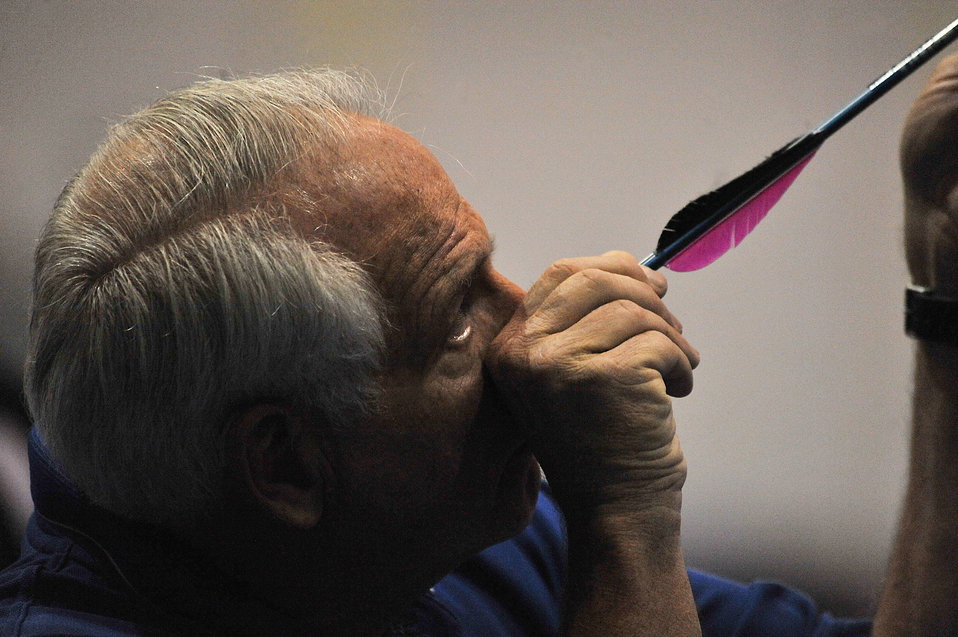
Warrior Games

Air Force coach Gary Fooshee checks an arrow belonging to his player during the archery competition of teh 2012 Warrior Games at the U.S. Air Force Academy in Colorado Springs, Colo., May 2, 2012. The Air Force was swept by the Marines and Army, which took gold and silver respectively.